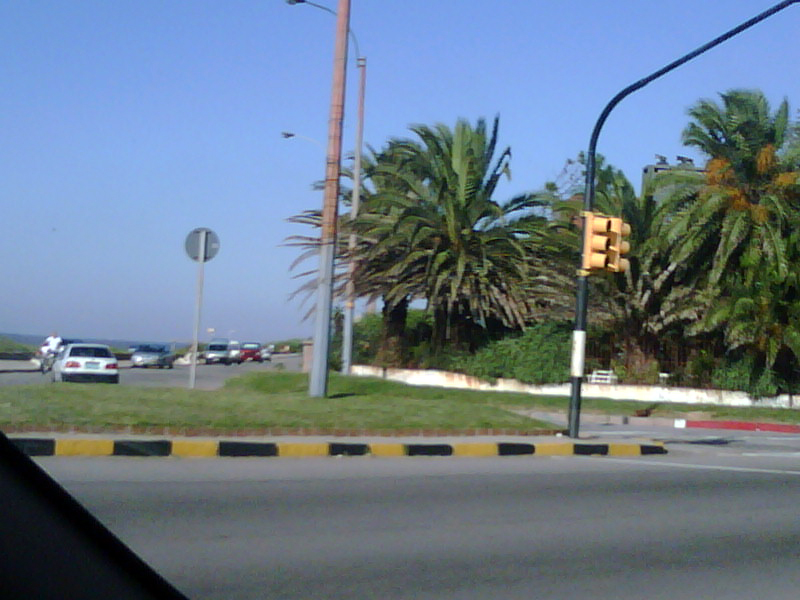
Behind the Scenes: Wheels Down in Montevideo, Uruguay

Scenes taken from U.S. Secretary of State Hillary Rodham Clinton's traveling team as they arrive in Montevideo, Uruguay March 1, 2010.